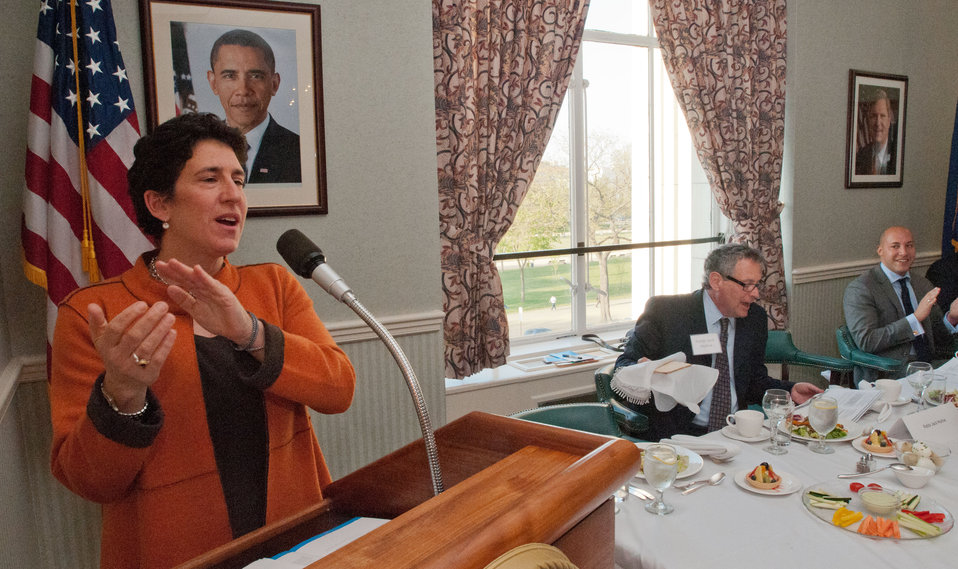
Rabbi Sydney Mintz, (left) and Rabbi Jack Moline (center) co-lead the Food and Justice Passover Seder at the U.S. Department of Agriculture headquarters in Washington, D.C., on Wednesday, April 4, 2012.